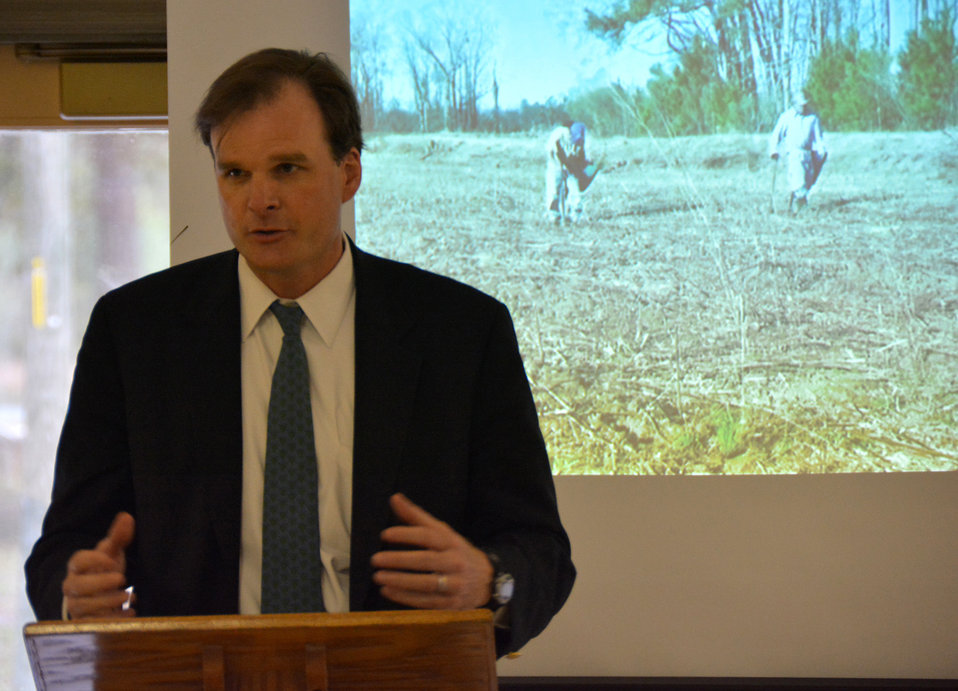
SC BonnieatPodium

U.S. Department of Agriculture (USDA) Natural Resources and Environment (NRE) Under Secretary Robert Bonnie spoke to local, state and federal partners in South Carolina and thanked them for their collaborative efforts to restore and improve the ecosystem.